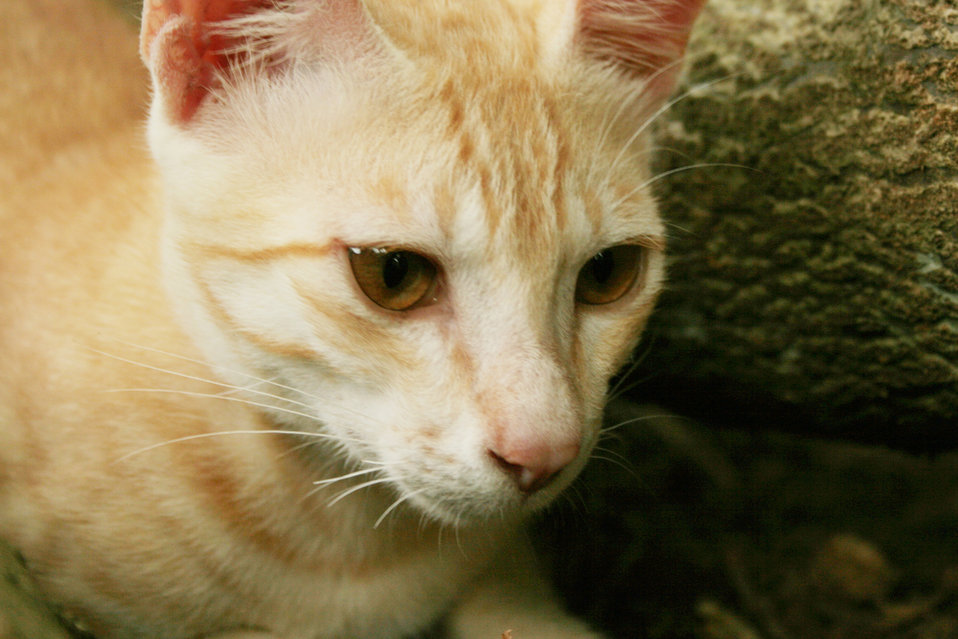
This work is dedicated to Public Domain